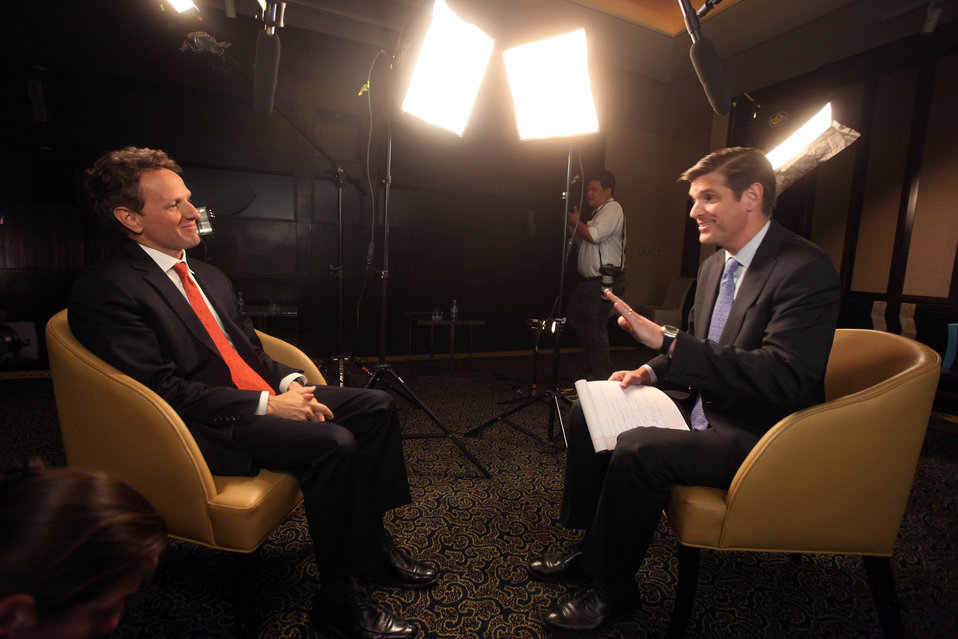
SandED 5/25/10

Peter Cook of Bloomberg News interviewed Secretary Geithner in China on May 25.